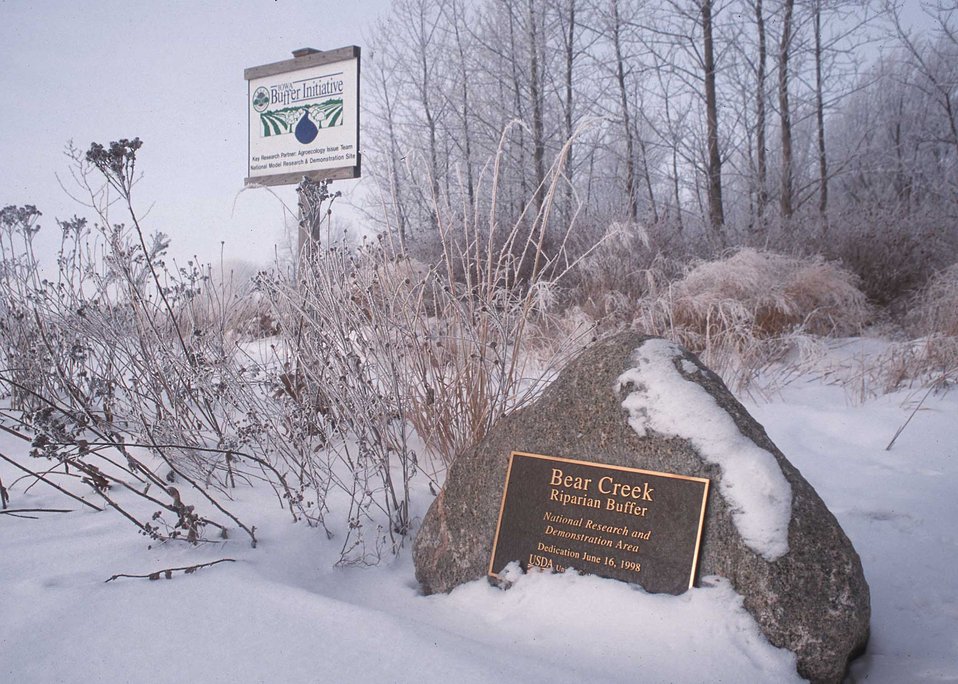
Bear Creek, in Story County, Iowa, was dedicated as a national demonstration area for conservation buffers by the US Department of Agriculture.